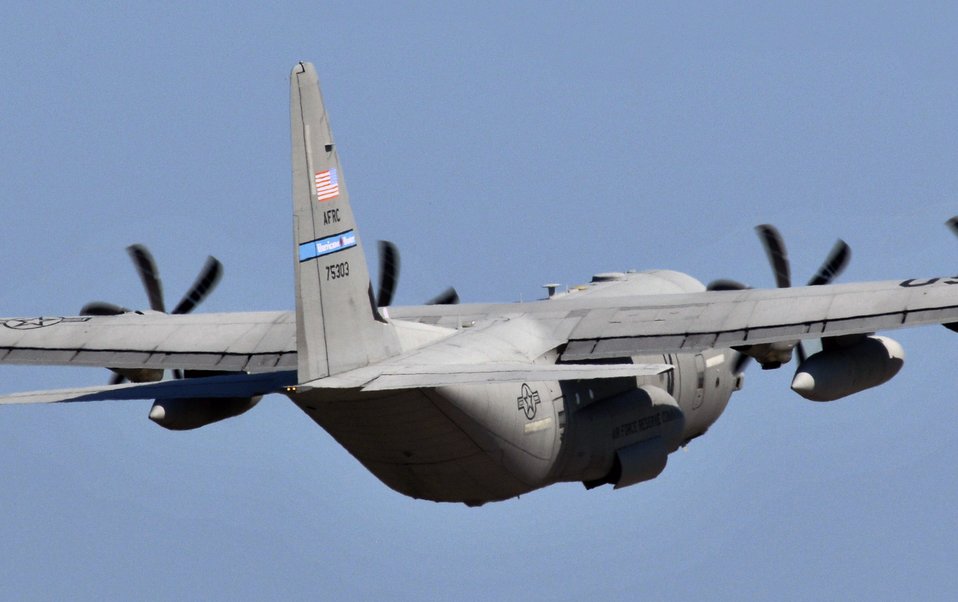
Hurricane Hunters track Ike

A WC-130J Hurricane Hunter takes off for a mission into the eye of Hurricane Ike Sept. 10 from Keesler Air Force Base, Miss. With the exception of two palletized weather stations, the WC-130J is not modified for missions into hurricanes and other troical weather. The aircraft is manned by reservists from the 53rd Weather Reconniassance Squadron.